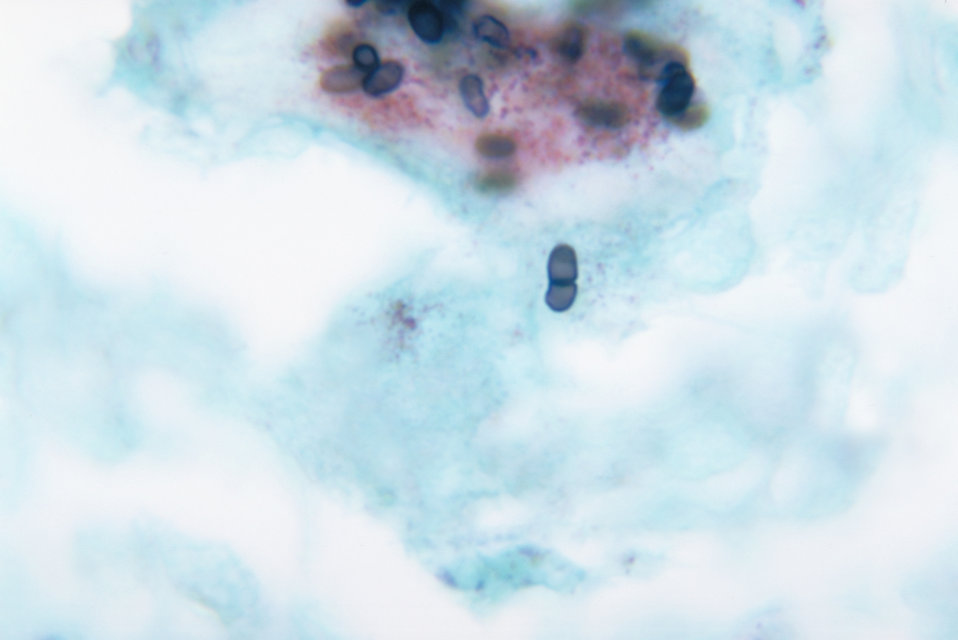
Note the histopathologic changes seen in a mouse testicle indicating penicilliosis due to Penicillium marneffei.